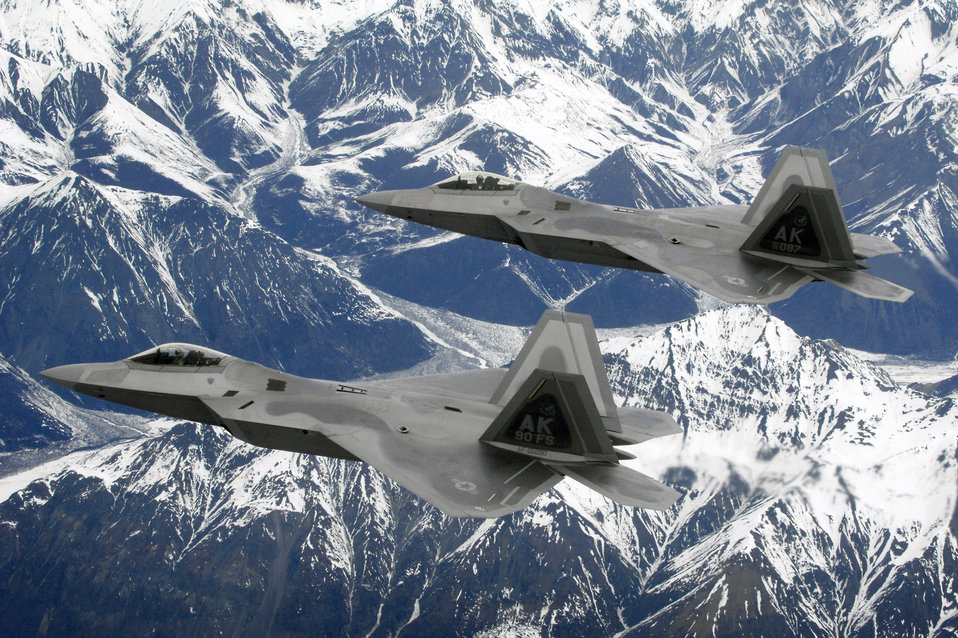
Flying high...

F-22 Raptors fly a training mission near Elmendorf Air Force Base, Alaska. The aircraft are assigned to the 3rd Wing at Elmendorf.